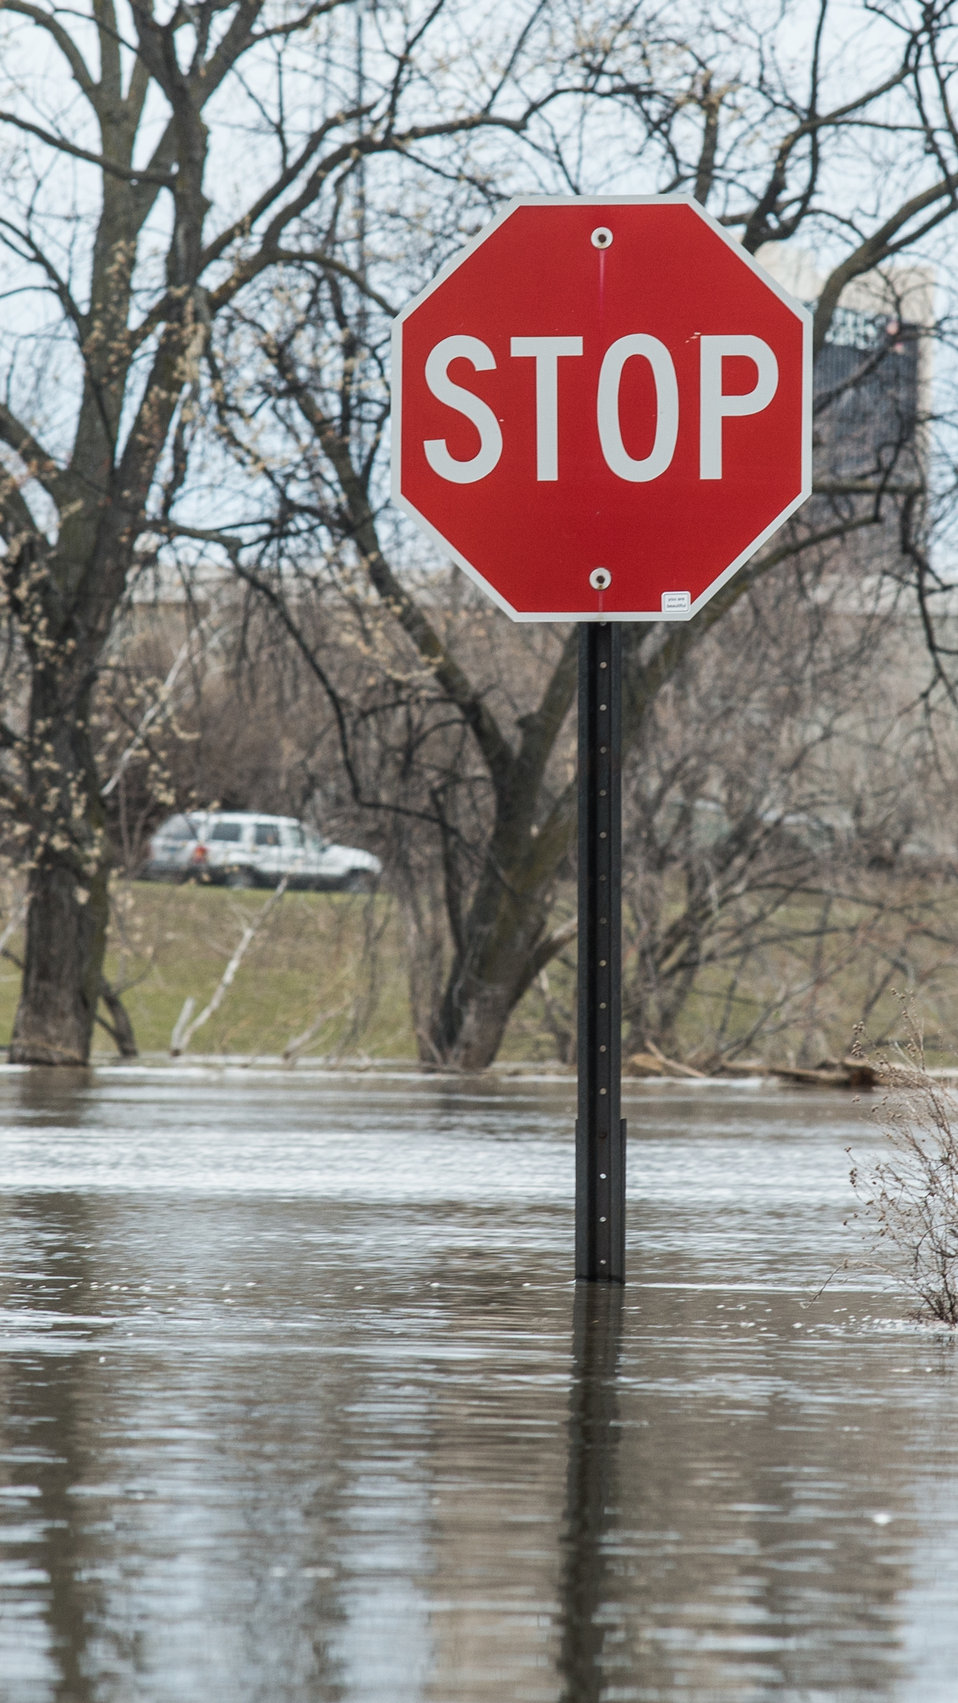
Flooded roadway, stop sign, and a car crossing into Fargo, ND, are seen from Center Mall Ave. and 3rd St. N., in Moorhead, MN. on Monday, April 29, 2013. To learn about the Red River Basin Initiative, see www.mn.nrcs.usda.gov/news/features13/RRBI.html.